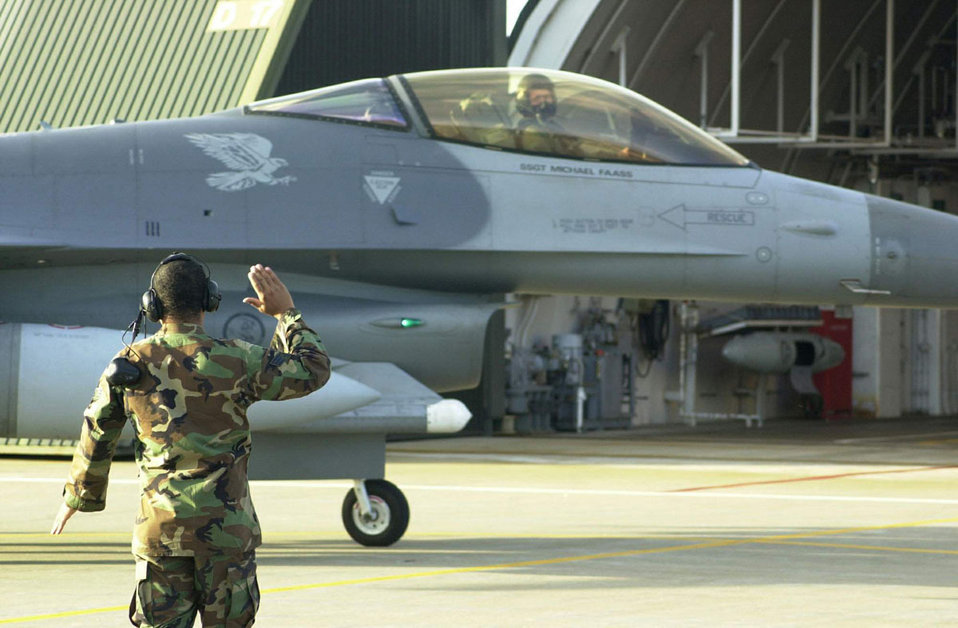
3,000

MISAWA AIR BASE, Japan -- Senior Airman Hashim Haskins, an F-16 crew chief for the 14th Fighter Squadron here, guides Lt. Col. Kurt Neubauer to his parking spot after he completes 3,000 flying hours in the F-16 Fighting Falcon. Neubauer is one of only 58 pilots to accomplish this feat.